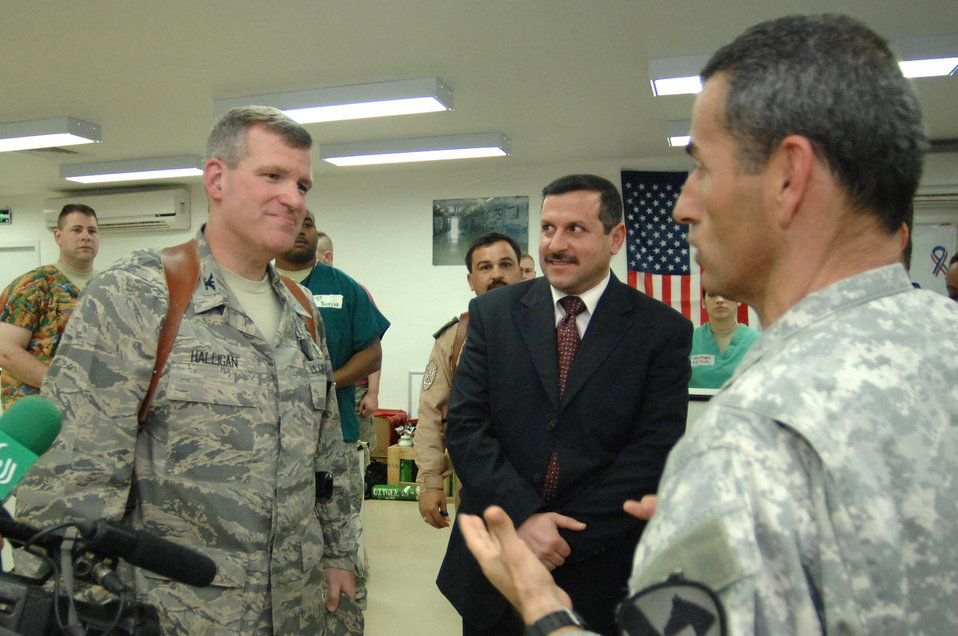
Iraqi leaders visit civilian IED victims at Air Force hospital

Col. Timothy Halligan speaks with city of Balad Mayor Amer Mrhown Al-Obedy (center) through a translator about the importance of training Iraqi doctors to eventually take the helm at the Air Force Theater Hospital Feb. 11 at Balad Air Base, Iraq. Colonel Halligan is the 332nd Expeditionary Medical Group deputy commander and deployed from Lackland Air Force Base, Texas.